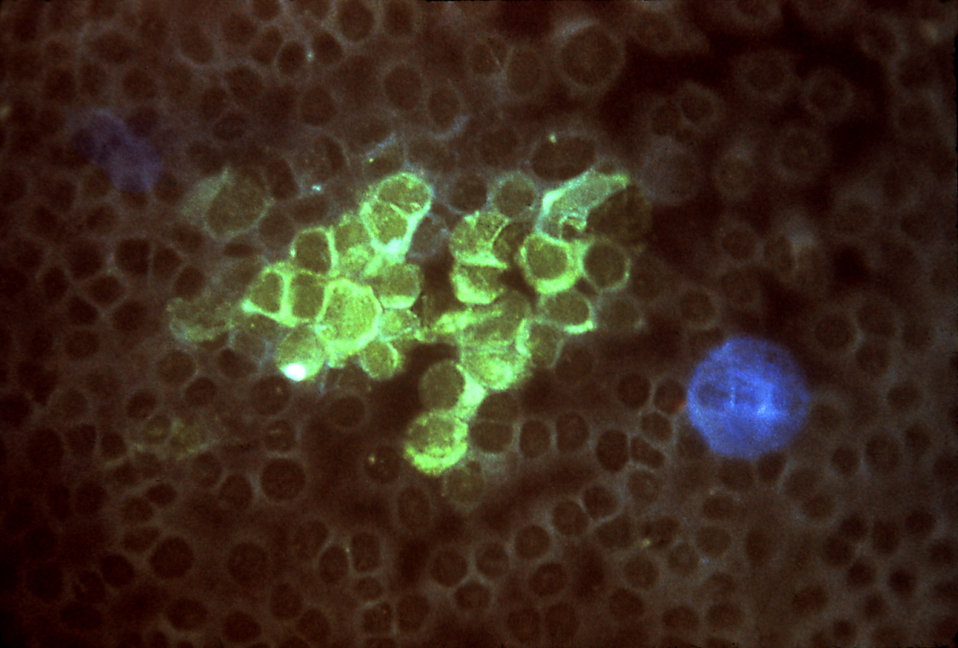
This photomicrograph reveals herpes virus antibodies (green) detected here using immunofluorescent (IF) staining technique.